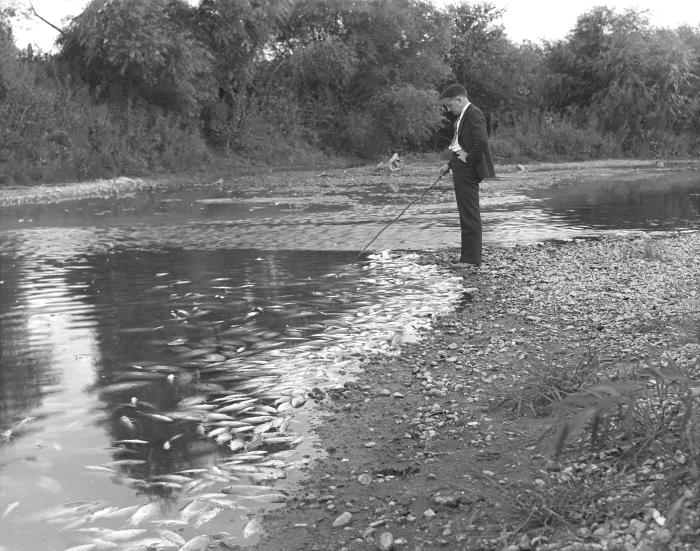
This historic photograph was taken on August 30, 1935, for the purpose of documenting a fish kill. A large number of fish were killed when industrial waste contaminated the Blue Earth River, near Winnebago, Minnesota. The waste had originated from a canning plant located on the river, which depleted the water's oxygen supply, creating an uninhabitable environment for the river's natural inhabitants.